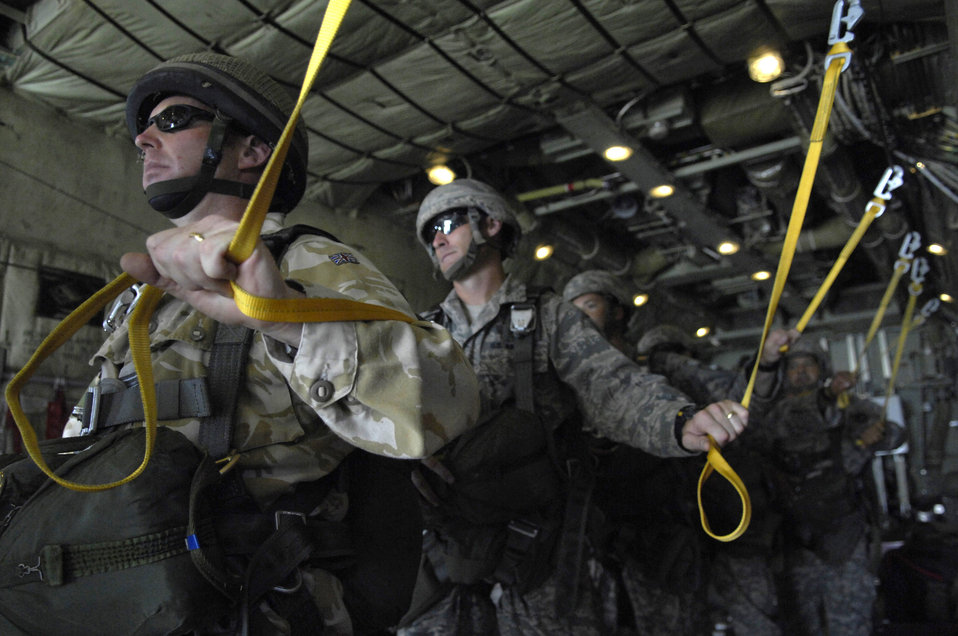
Jump training at Lackland

Sqn. Ldr. Tim Harrison waits to jump out of a Marine C-130 Hercules as it flies over Lackland Air Force Base, Texas, July 23. Squadron Leader Harrison is an exchange officer from the Royal Air Force attached to the 342nd Training Squadron at Lackland AFB as a deputy officer. Aircrew and aircraft are from the Marine Aerial Refueler Transport Squadron 234 at Joint Reserve Base/Naval Station Fort Worth, Texas.